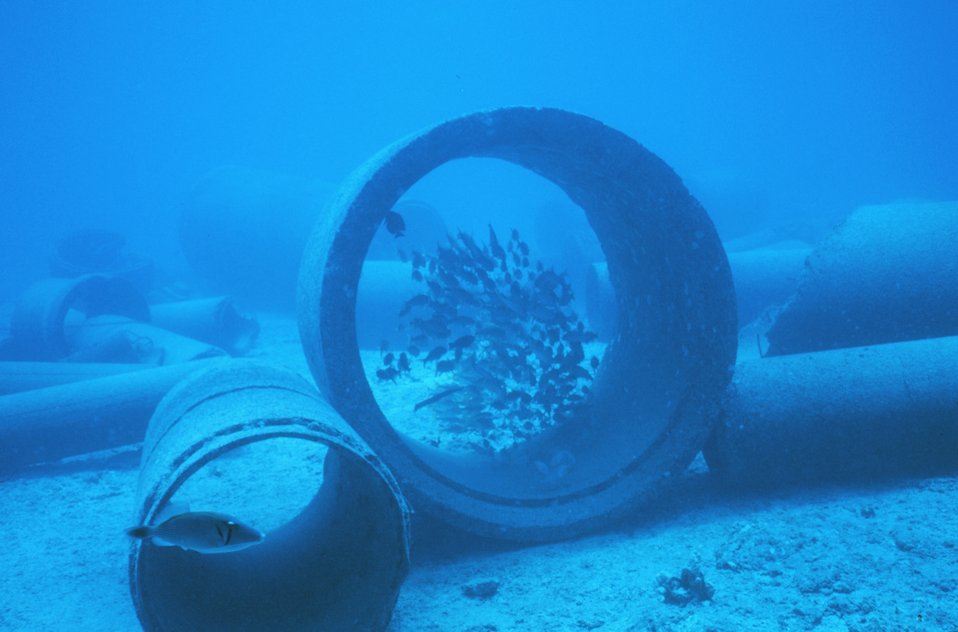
School of Mulloidichthys samoensis (Weke) in large concrete pipe. This was soon after the placement of the artificial reef.